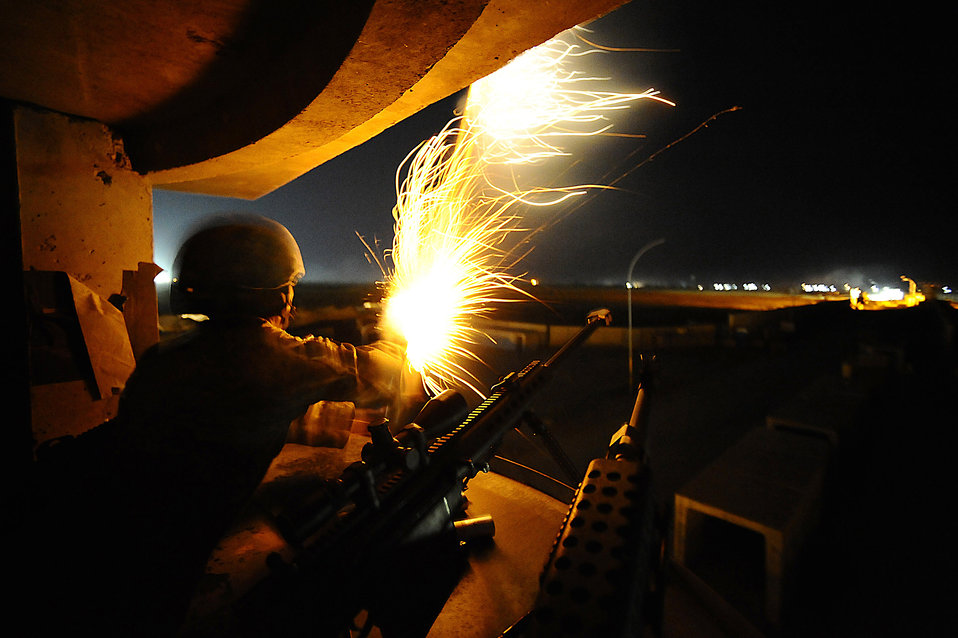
Light 'em up

Airman 1st Class Martin Uresti fires a signal flare from an observation tower Nov. 15 at Joint Base Balad, Iraq. Several security forces Airmen were practicing their proficiency deploying signal and illumination flares. Airman Uresti is a security forces apprentice with the 532nd Expeditionary Security Forces Squadron deployed from Lackland Air Force Base, Texas. His hometown is Donna, Texas.